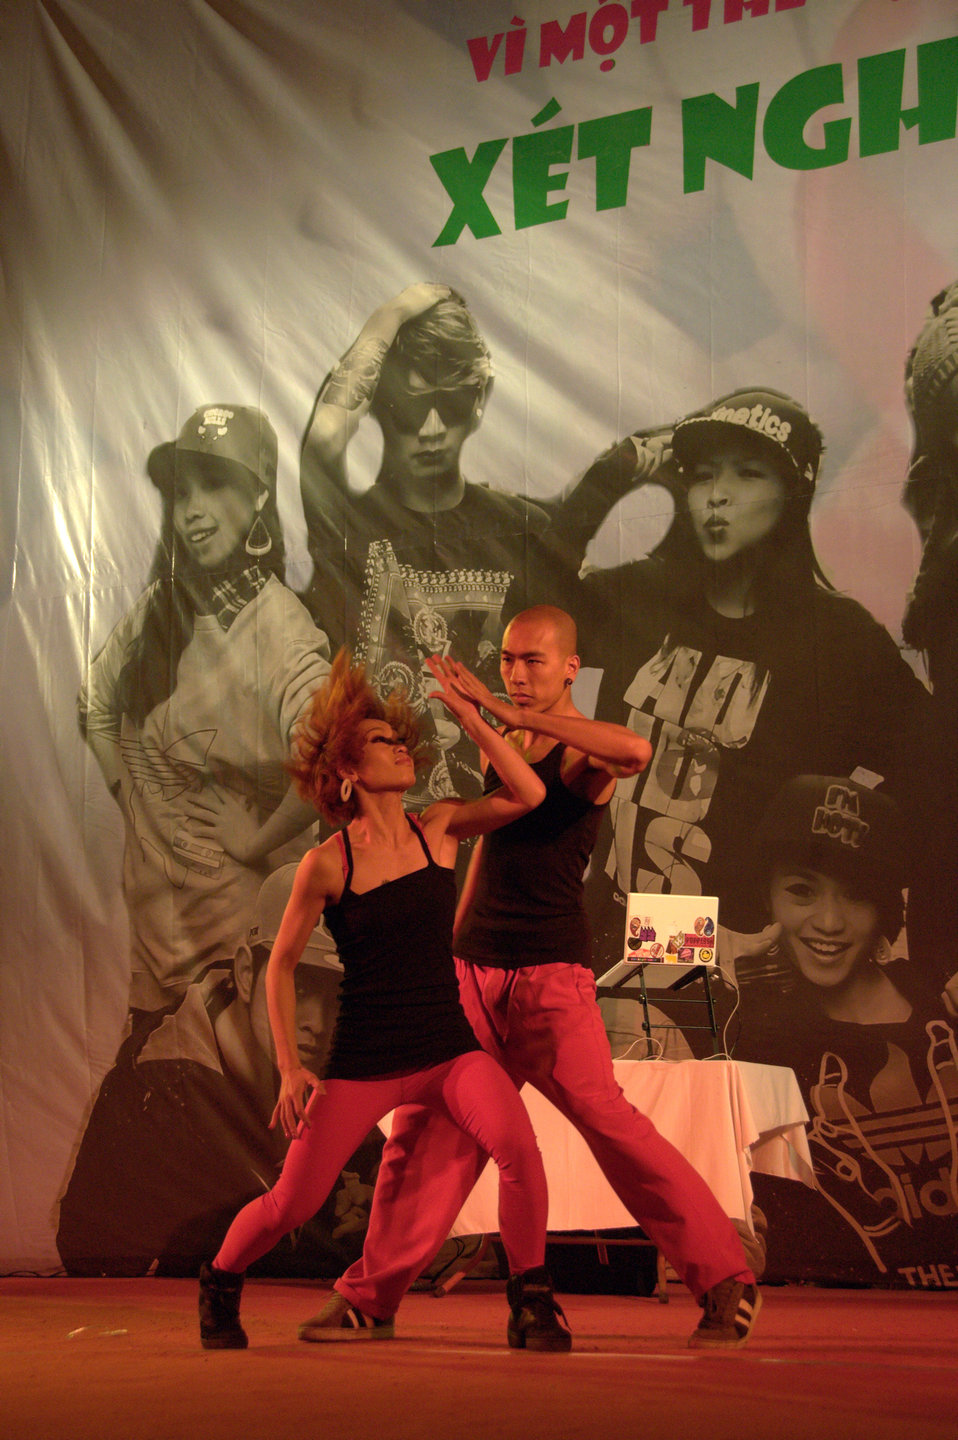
USAID and PEPFAR supports an outdoor concert to promote Vietnam's national action month for HIV

Hanoi, December 18, 2012.